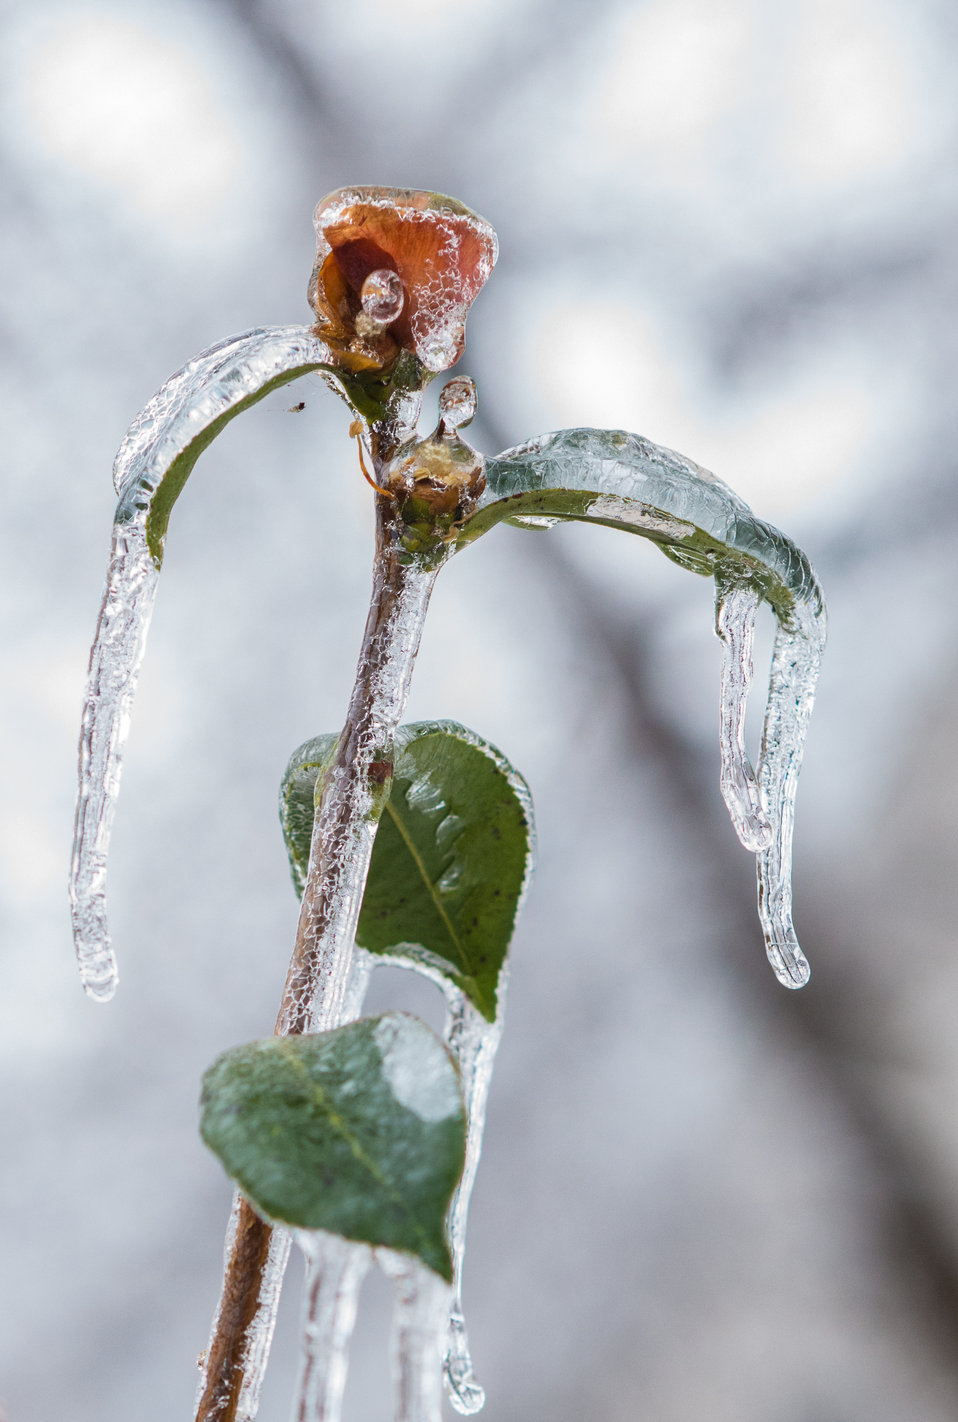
Freezing rain covers flowers, plants and trees in Falls Church, VA on Monday, Dec. 9, 2013.